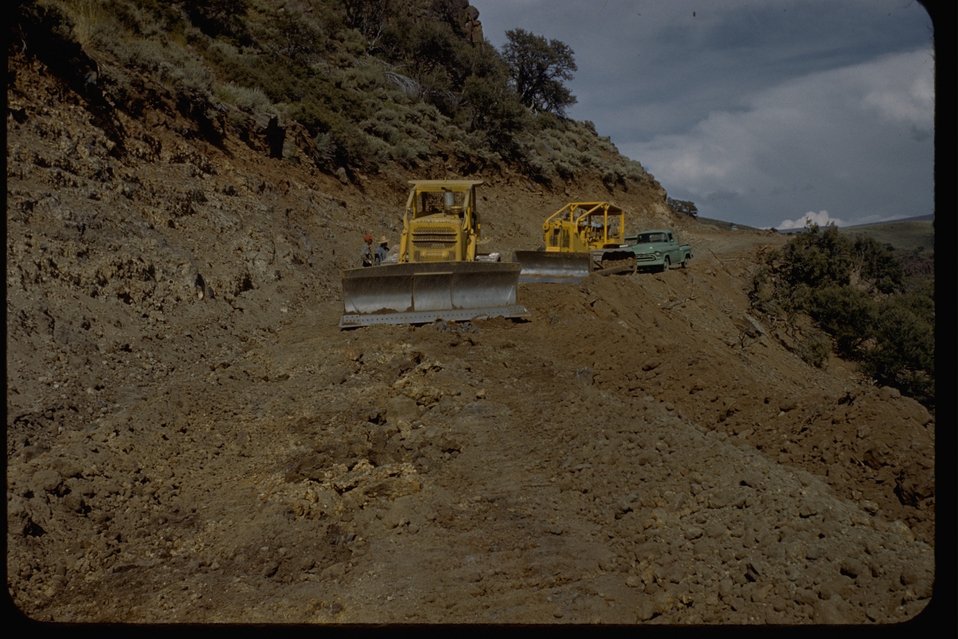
Heavy road construction or road maintenance on the Rooster Comb section of the Steens Loop Back Country Byway.